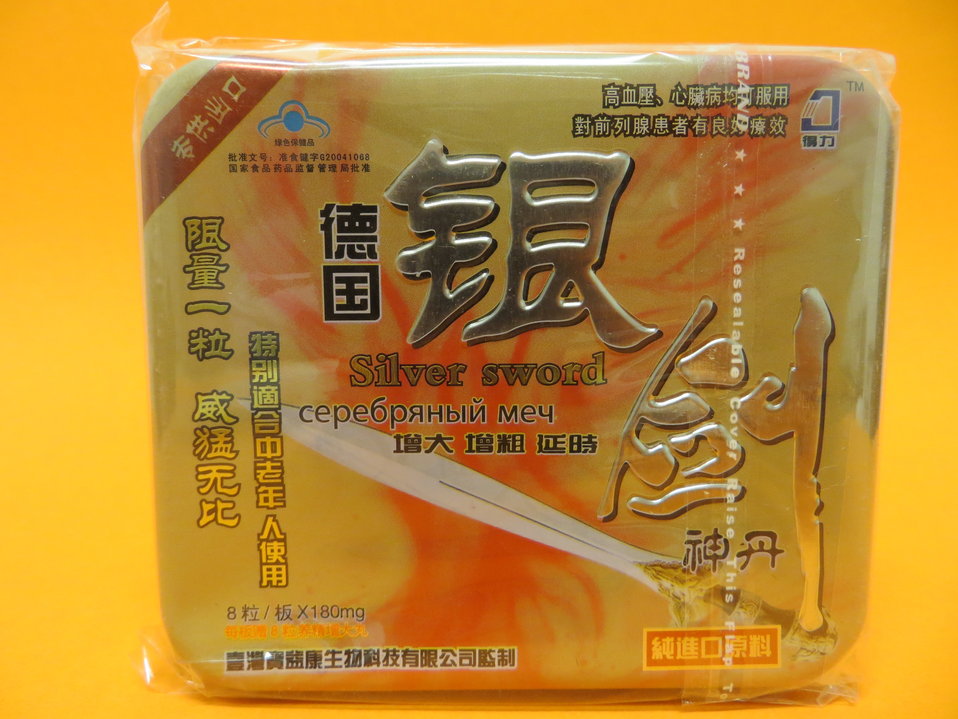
Silver Sword

June 27, 2013 - The FDA is advising consumers not to purchase or use 'Silver Sword,' a product promoted and sold for sexual enhancement. The product was found to contain undeclared sildenafil. For more information, go to www.fda.gov/Drugs/ResourcesForYou/Consumers/BuyingUsingMe....

And read this Consumer Update: Beware of Fraudulent ‘Dietary Supplements’